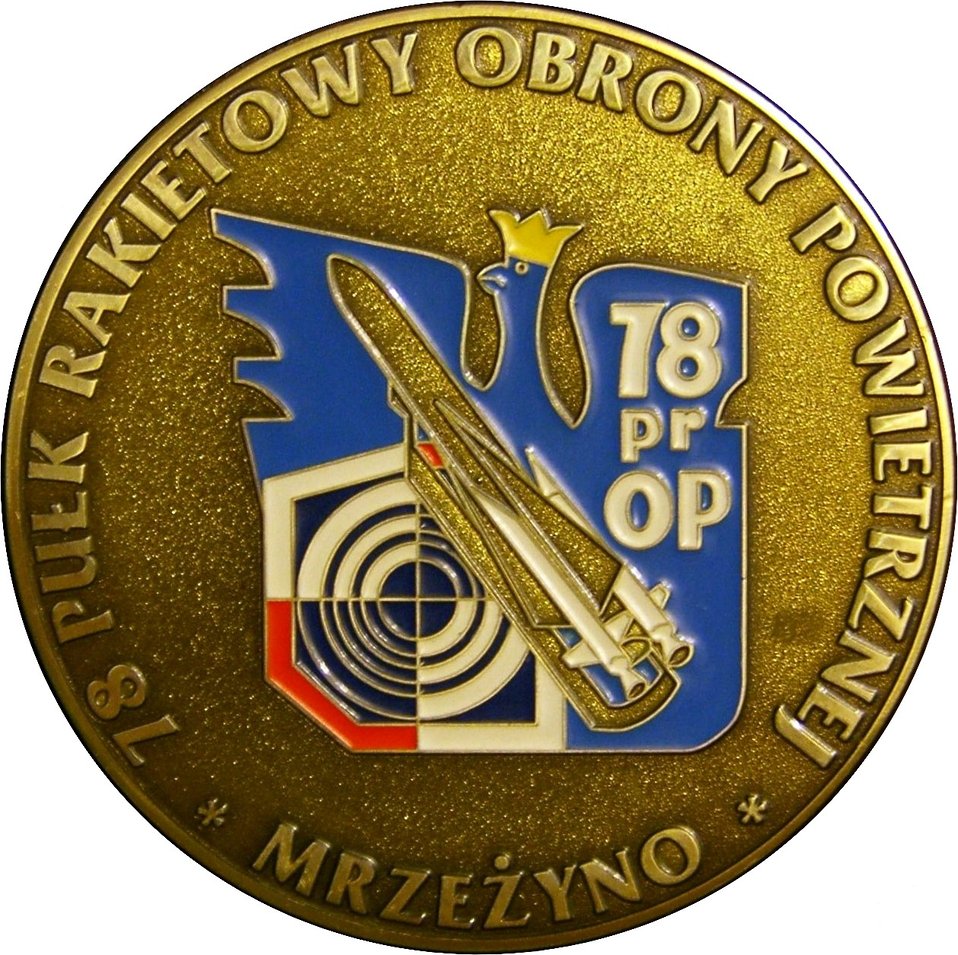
Polski: Medialion z pamiątki nadania sztandaru dla 78. Pułku Rakietowego Obrony Powietrznej Kraju w Mrzeżynia z dnia 27 września 2003